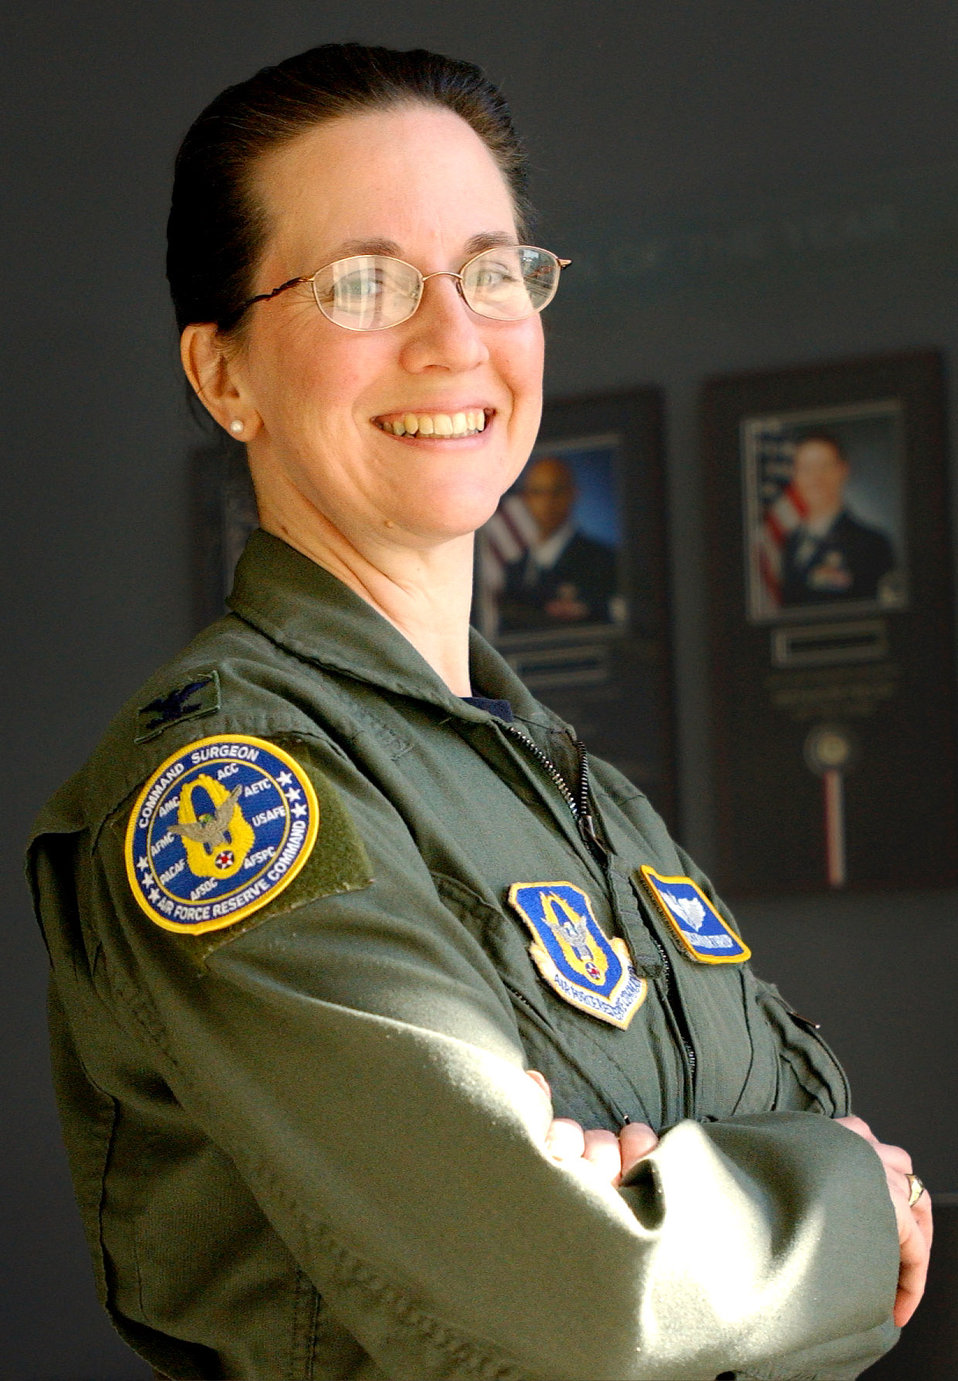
Reserve doctor chosen for medical specialty board

Col. (Dr.) Susan Northrup was selected in January to serve as an aerospace medicine representatiave on the American Board of Preventive Medicine. As a board member, Colonel Northrup will supervise the process of screening, testing and certifying people seeking board certification in occupational, preventive and aerospace medicine. Colonel Northrup is a traditional reservist serving at Robins Air Force Base, Ga.